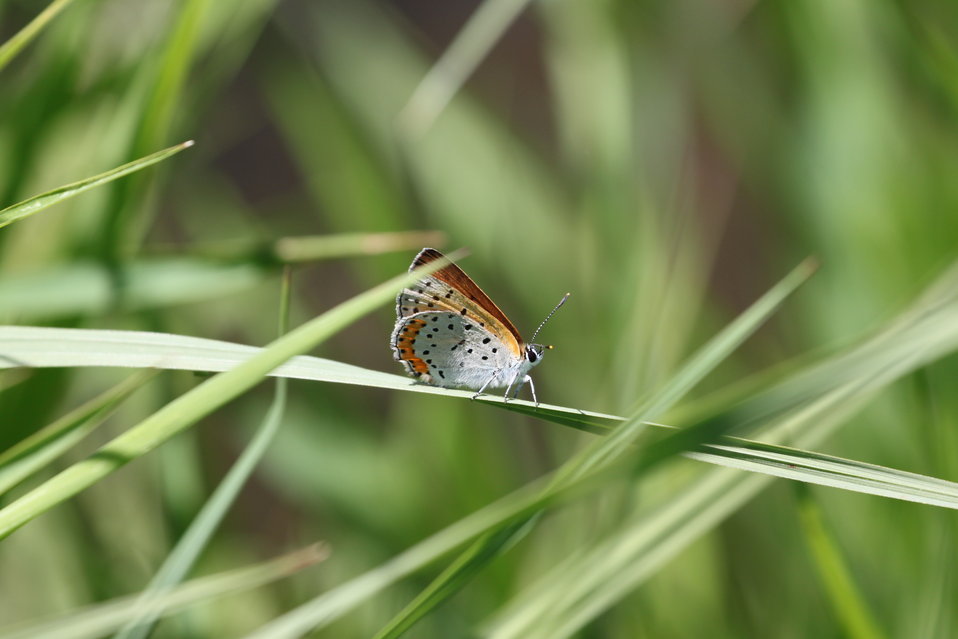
Bronze Copper

Lycaena hyllus resting on fringe of wetland.